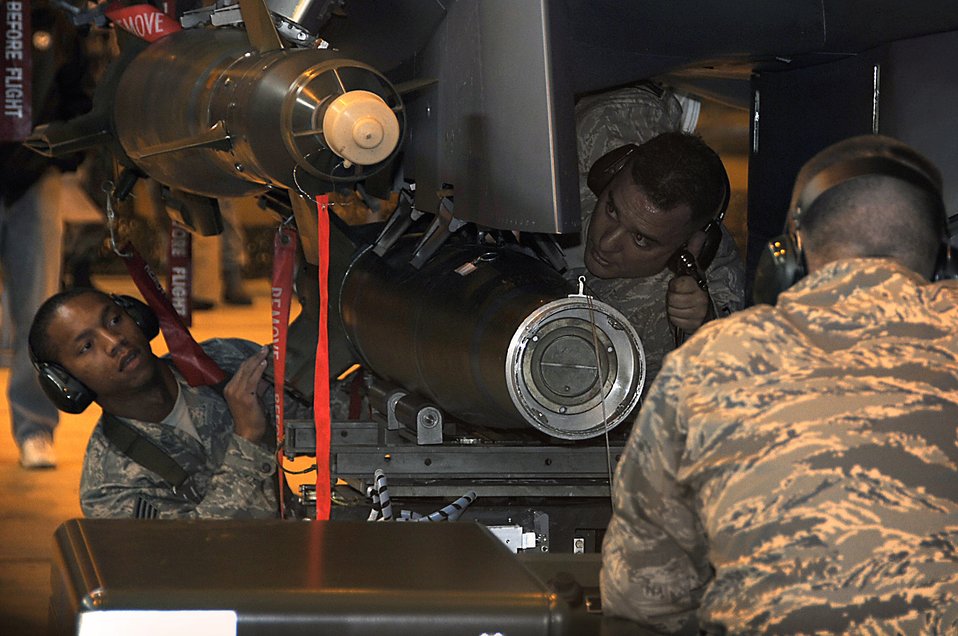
Ready for showtime

Staff Sgt. David Evans (left) and Master Sgt. Donald DeLeo attach a guided bomb unit to an F-15E Strike Eagle during a load demonstration Sept. 23. for the Joint Civilian Orientation Conference at RAF Lakenheath, England. They are with 48th Maintenance Group.